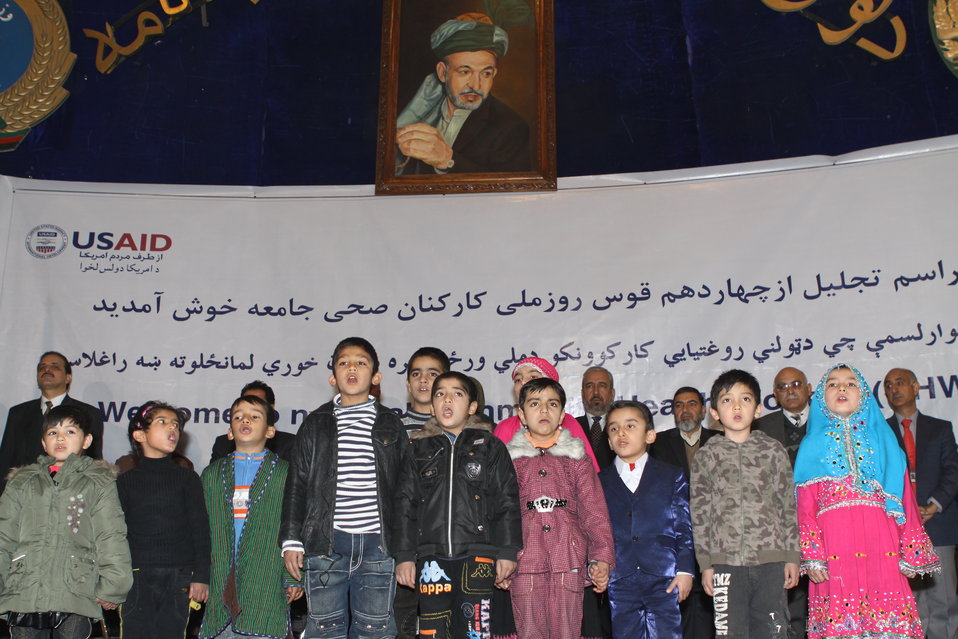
Community Health Workers Celebrated

Kabul, Afghanistan | December 5, 2010 — In support of the United Nations designated International Volunteer Day for Economic and Social Development, Afghanistan’s Ministry of Public Health celebrated its annual Community Health Worker Day today. Acting Minister of Public Health Dr. Suraya Dalil, USAID Senior Deputy Mission Director Robert Hellyer, other government officials, and international donors joined in recognizing the critical contribution of community health workers in Afghanistan and encouraging them to continue their voluntary support to their communities.
The event praised the contributions of the more than 22,000 volunteers throughout the country who deliver community level health-education, counseling, and services out of village health posts located in private homes. The Ministry of Public Health envisioned that community-based healthcare programs will actively encourage communities and families to adopt healthy lifestyles and behaviors, and provide families access to high quality and socially acceptable preventative medicine and life-saving services.
“We have 22,000 community health workers in Afghanistan that are able to implement the basic and standard medicines. They all have been trained through a job description,” said Minister Dalil. Addressing the health workers, she added, “I am proud and feel powerful that I have people like you.”
USAID-funded health projects collaborate closely with the Ministry of Public Health to improve the health and nutritional status of Afghans, provide quality primary healthcare, and promote healthy behaviors at the community and household-levels. USAID supported the training of more than 9,000 of the volunteer community health workers currently working in Afghanistan.
“On behalf of the American people, I congratulate the Community Health Workers for their diligence to gain the skills and knowledge necessary to serve their communities in this important role,” said USAID Senior Deputy Mission Director Hellyer. “USAID strongly supports community based health care and believes that quality community-based health services are essential to reaching Afghanistan’s Millennium Development Goals.”
To support the Basic Package of Health Services, USAID assisted in developing the community health worker training manual, helped train community health worker supervisors and master-trainers, facilitated in-service training, and produced and developed reporting tools, job aids, and education materials.